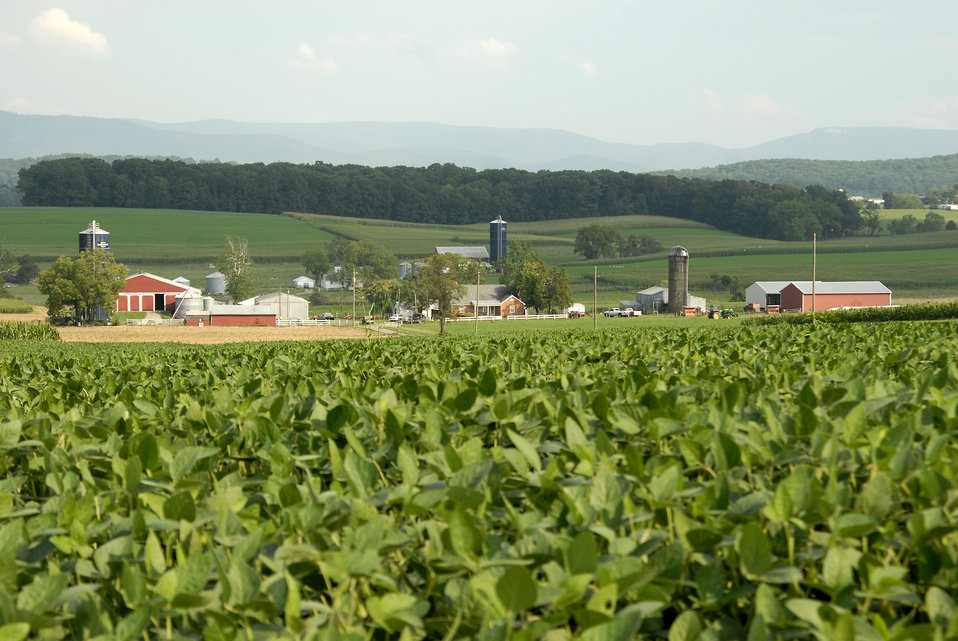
Fall is harvesting time on farms in Augusta County, Virginia on September 9, 2008.